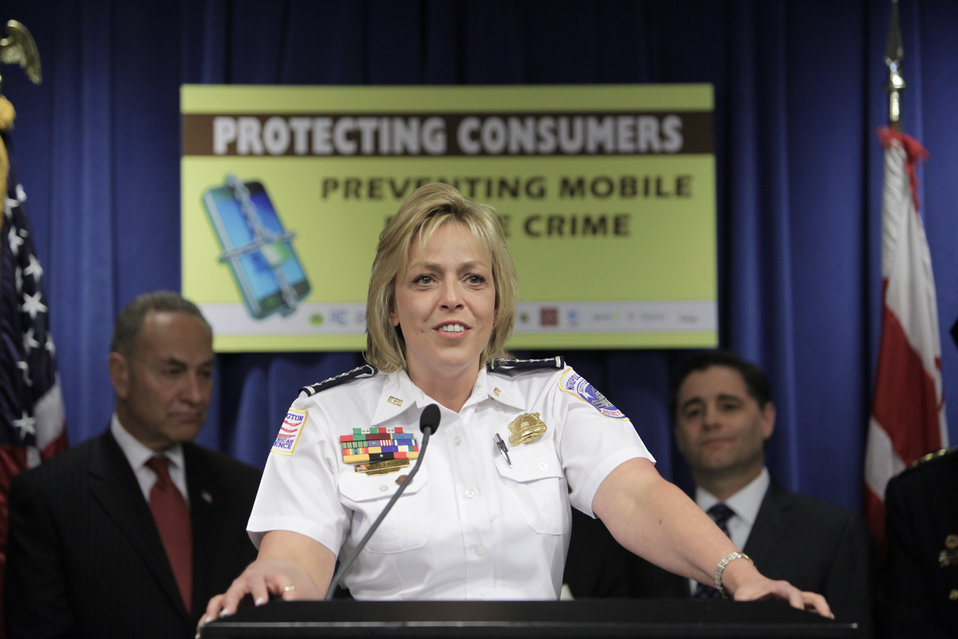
Chief Cathy Lanier of the MPD of D.C. introduces speakers for the event at the John A. Wilson Building in Washington, DC on April 10, 2012.